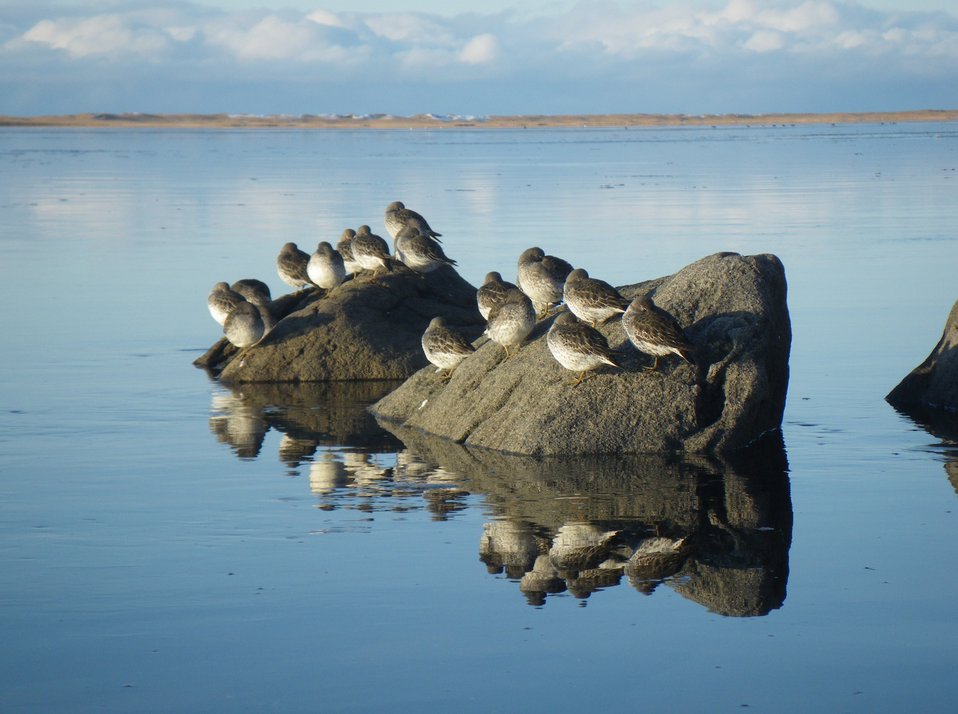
Rock Sandpiper in winter

izembek Lagoon, Izembek National Wildlife Refuge
Photo by Kristine Sowl,
USFWS, Public Domain